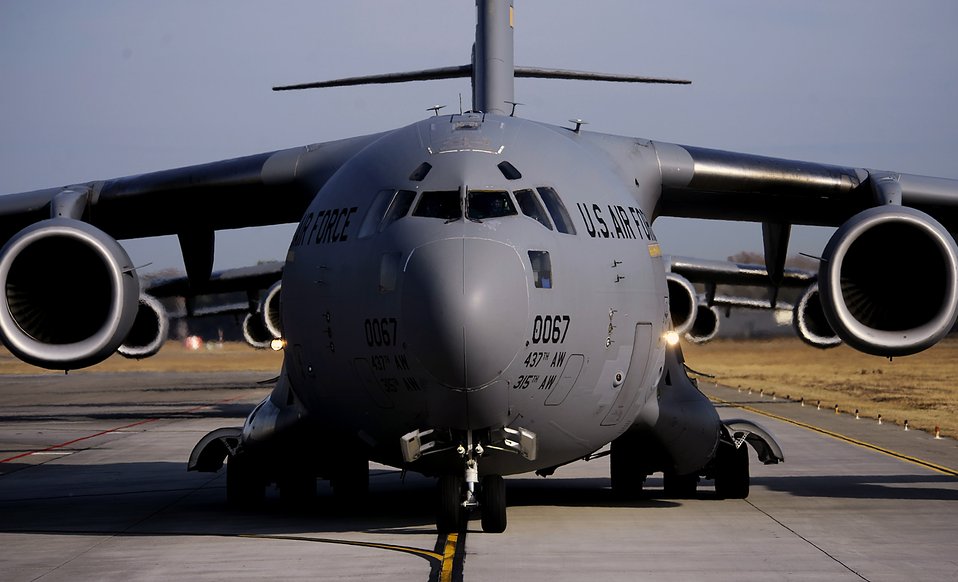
Show of force

C-17 Globemaster IIIs from the 437th and 315th airlift wings prepare for takeoff during a strategic brigade airdrop exercise involving a 13-ship formation Dec. 18 from Charleston Air Force Base, S.C. C-17 Globemaster III transporters must be able to meet the Army's goal of airdropping a brigade's worth of troops and equipment (about 3,250 Soldiers and 3,450 tons of equipment). Charleston AFB aircraft currently account for half of the Air Force strategic brigade airdrop requirement.